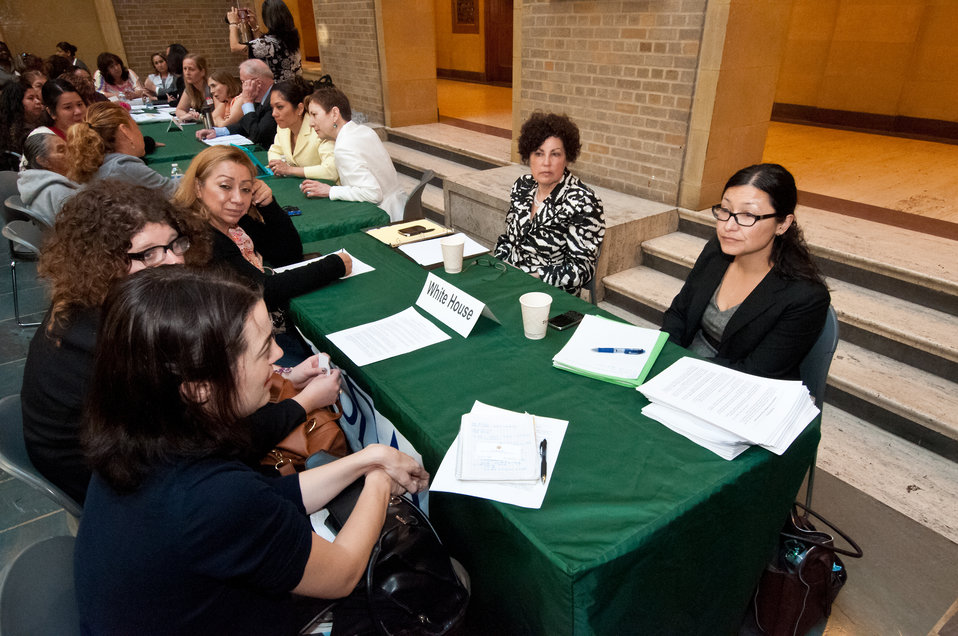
Julie Rodriguez, White House assists members of Alianza Nacional de Campesinas, an organization of Hispanic Farmworker women at the United States Department of Agriculture ;USDA), Office of Advocacy and Outreach Breakfast Networking Reception in Washington, DC, Tuesday, April 9, 2013. The reception allowed the women to network and discuss their issues, priorities and opportunities in rural communities throughout the United States. The women were able to speak to representatives from nine Federal agencies with migrant programs: White House, USDA, Department of Health and Human Services (HHS), Housing and Urban Development (HUD), Department of Labor (DOE), Equal Employment Opportunity Commission (EEOC), Department of Education (DOE), Environmental Protection Agency and United States Citizenship and Immigration Services (USCIS).